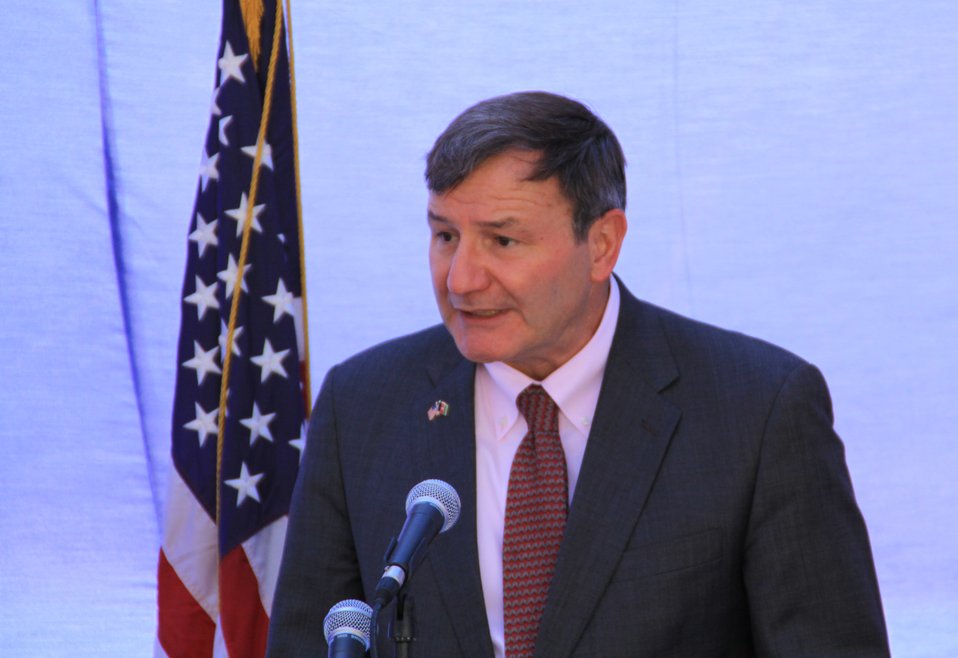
105 MW Tarakhil Power Plant Handover